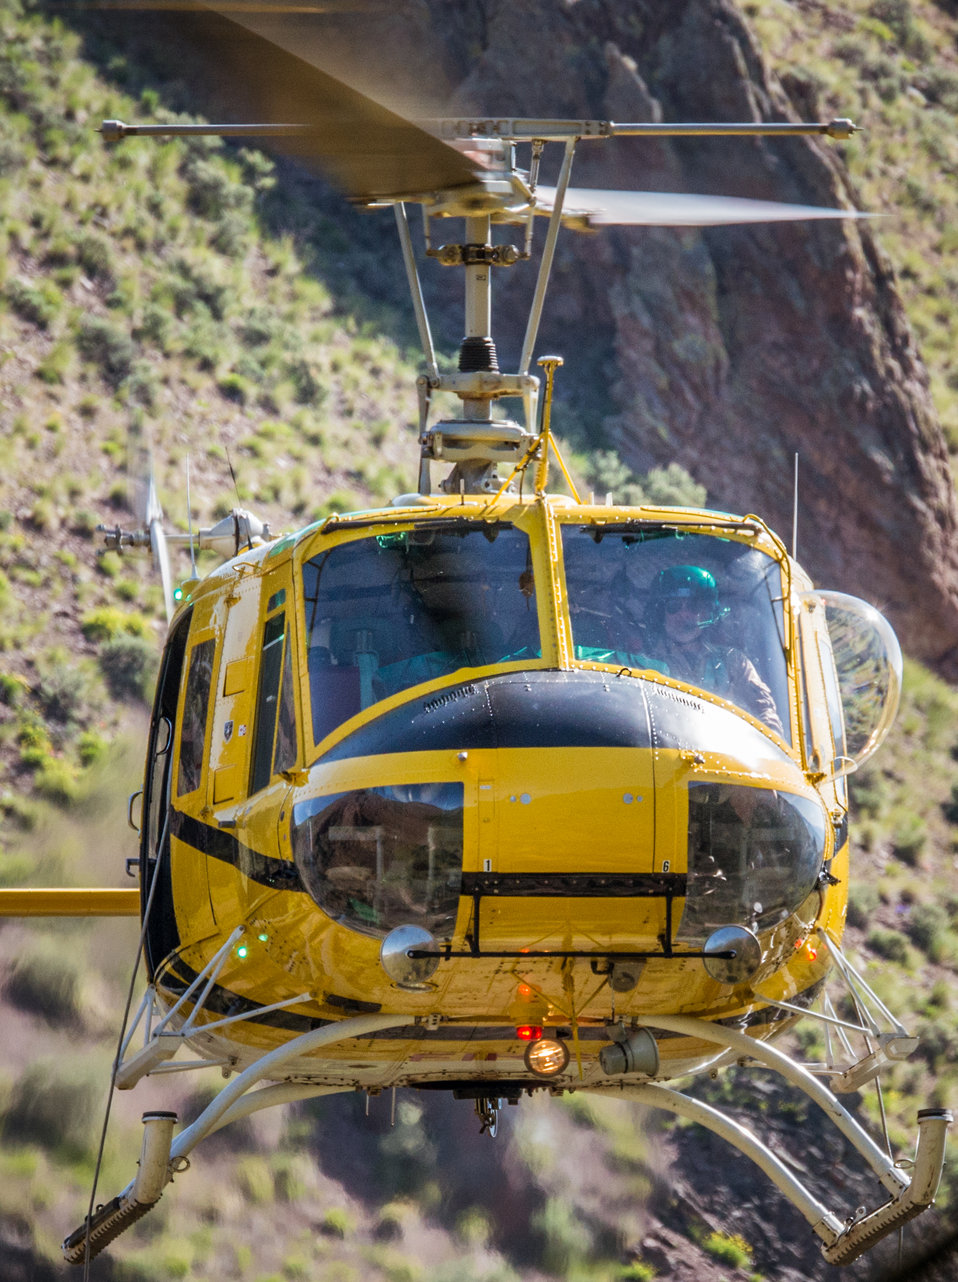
An Express's Bell 205A-1 Helicopter maintains altitude and position, both critical, for veteran wildland firefighter rappellers to descend to a landing zone in the Perreau Creek area, during the U.S. Department of Agriculture (USDA), U.S. Forest Service (USFS) National Helicopter Rappel Program’s Rappel Academy at Salmon Air Base, in Salmon, Idaho, on Thursday, May 15, 2014.